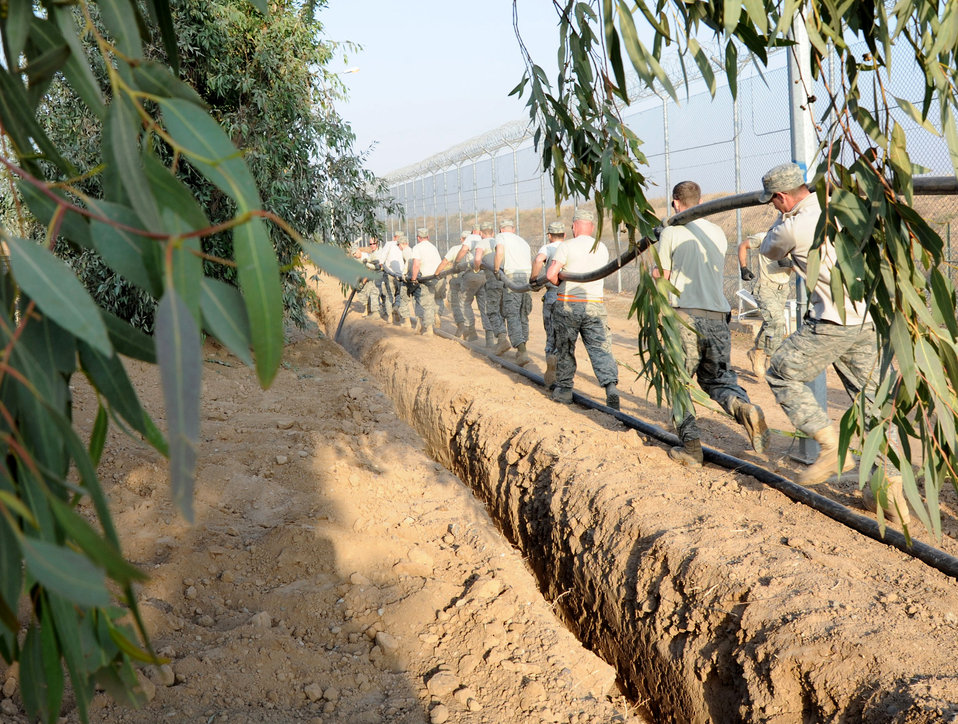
Civil engineers restore electricity

Members of the 332nd Expeditionary Civil Engineer Squadron lay a high-voltage power cable Jan. 6, 2011, at Joint Base Balad, Iraq. The cable will provide power for local villagers who were without power for more than 85 days.